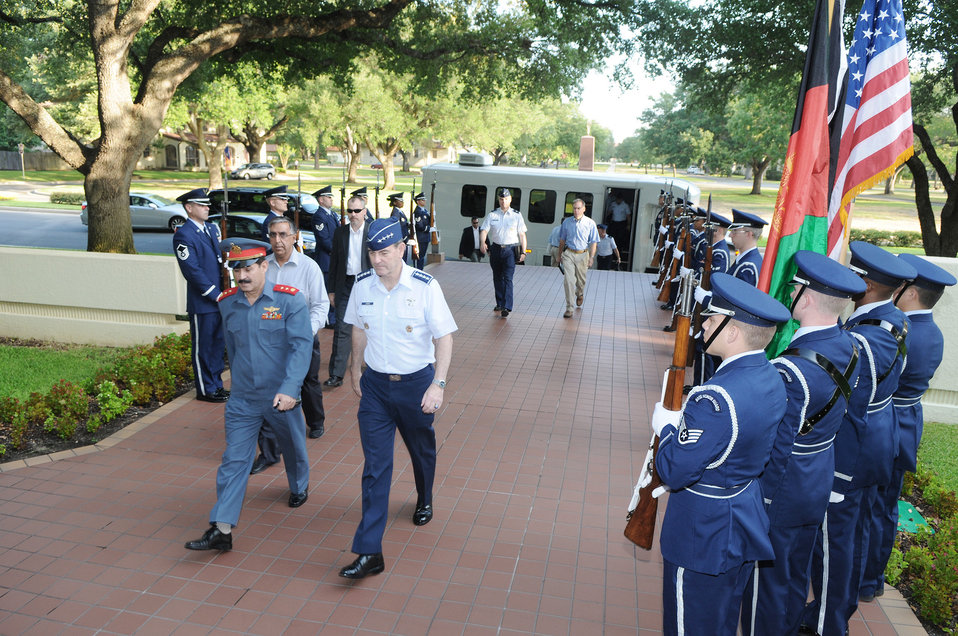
Afghan nation army air corps commander travels to AETC to strengthen training path

Afghan national air army corps Maj. Gen. Mohammad Dawran and Gen. Stephen R. Lorenz walk to meetings as part of General Dawran's visit to strengthen the training partnerships between the two air forces July 16 at Randolph Air Force Base, Texas. General Dawran is the Afghan national air army corps commander, and General Lorenz is the Air Education and Training Command commander.